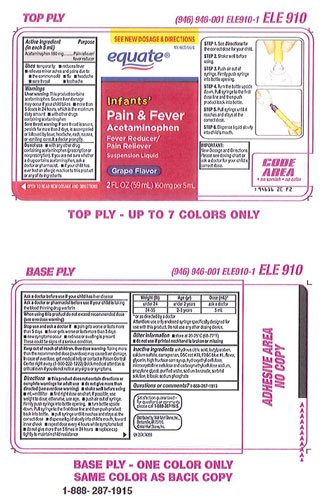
Recalled - Acetaminophen infant suspension liquid

November 1, 2013 – Product Recall – Perrigo Initiates Nationwide Voluntary Product Recall of Acetaminophen Infant Suspension Liquid, 160 Mg/5 Ml, Due to a Potential Defect with the Co-packaged Oral Syringe.